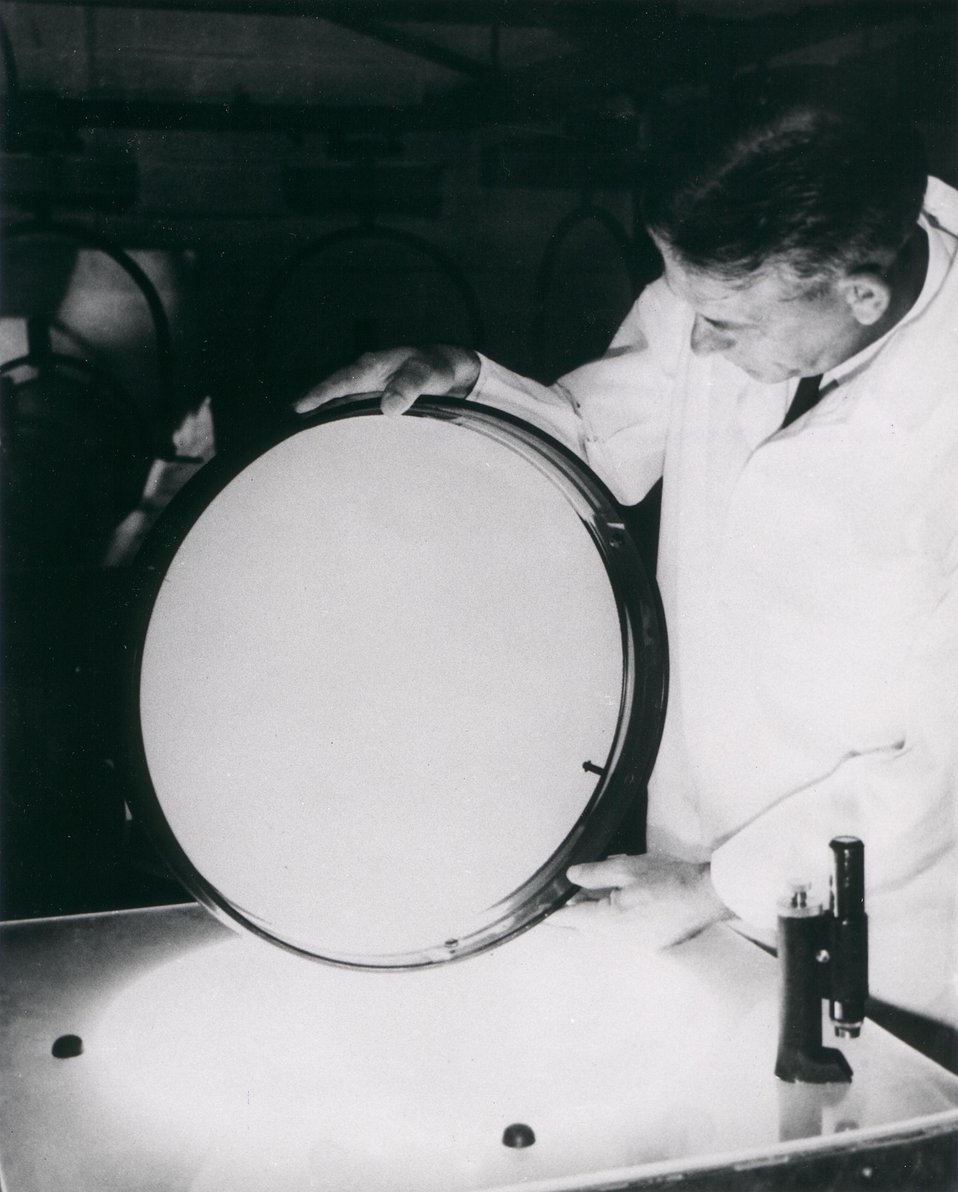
Vastly improved color television is one of the most recent examples of spin-off . Now the color TV picture has been changed--literally--by little known elements called rare earths. Circa 1966.